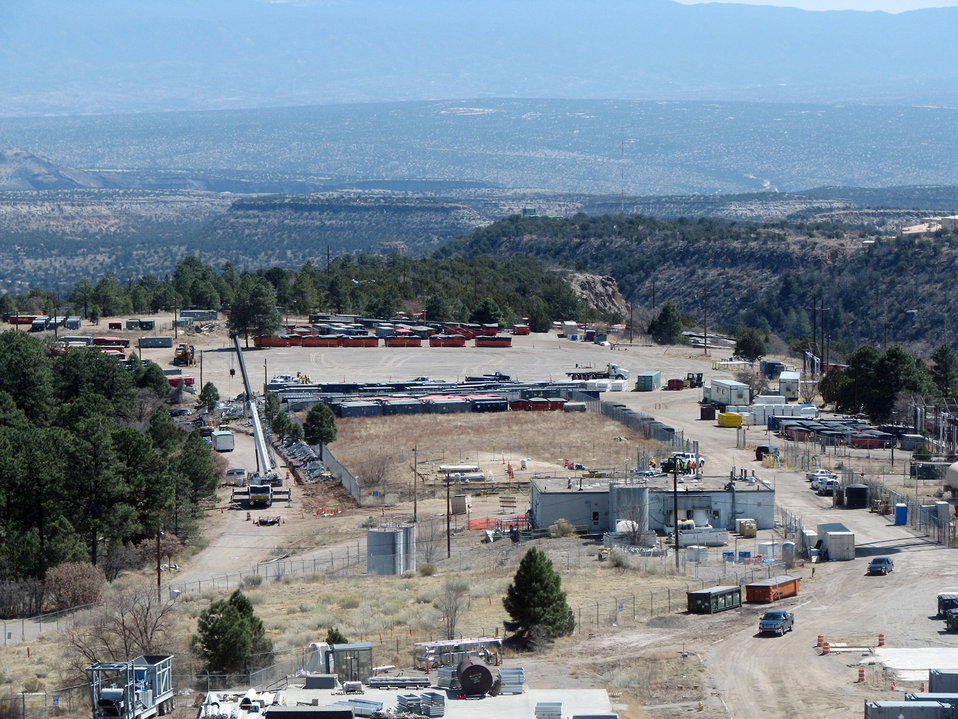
After photo of DP East area of Los Alamos National Laboratory's Technical Area 21

These photos show the DP East area of Los Alamos National Laboratory’s Technical Area 21 before the demolition of 10 buildings, left, and after demolition.